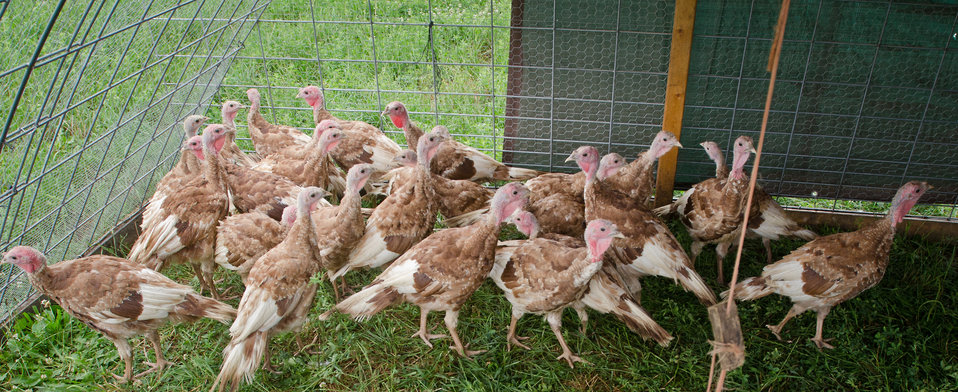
Broiler turkeys graze on organic pastures and live in pens that protect them from predators, direct sun light, and wind at Nick’s Organic Farm, owned by Nick Maravell in Adamstown, MD on Friday, July 12, 2013. The enclosures are light enough to be moved by hand, each day, one consecutive section at a time. This allows the pasture to easily recover from the grazing. The farm produces Black Angus beef, chicken, turkey, eggs, hay, soybeans, corn, alfalfa, orchard grass, rye; and other crops. The cattle are100% grass-fed receiving certified organic pasture, certified organic hay (in winter), water and mineral salts mixed with sea kelp. The cattle are not fed hormones, antibiotics or animal products. Poultry feed from grain is ground from organic grain. The poultry also graze on organic pastures. The farm has conducted on-farm research with federal, state and non-profit agencies to refine organic practices. An organization such as the U.S. Department of Agriculture (USDA) Agricultural Research Service (ARS) center in Beltsville has been able to conduct research to improve organic crops and to breed and manage the cattle so that they have.